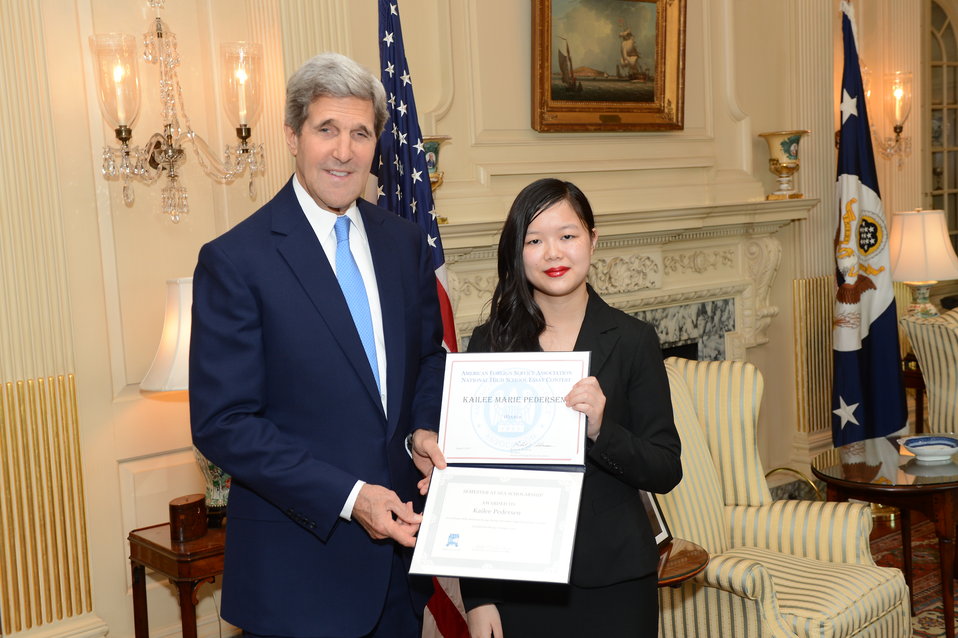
Secretary Kerry Kerry Meets With AFSA Essay Contest Winner, Kailee Pedersen

U.S. Secretary of State John Kerry meets with the winner of the American Foreign Service Association (AFSA) essay contest, Kailee Pedersen, at the U.S. Department of State in Washington, D.C., on August 8, 2013.